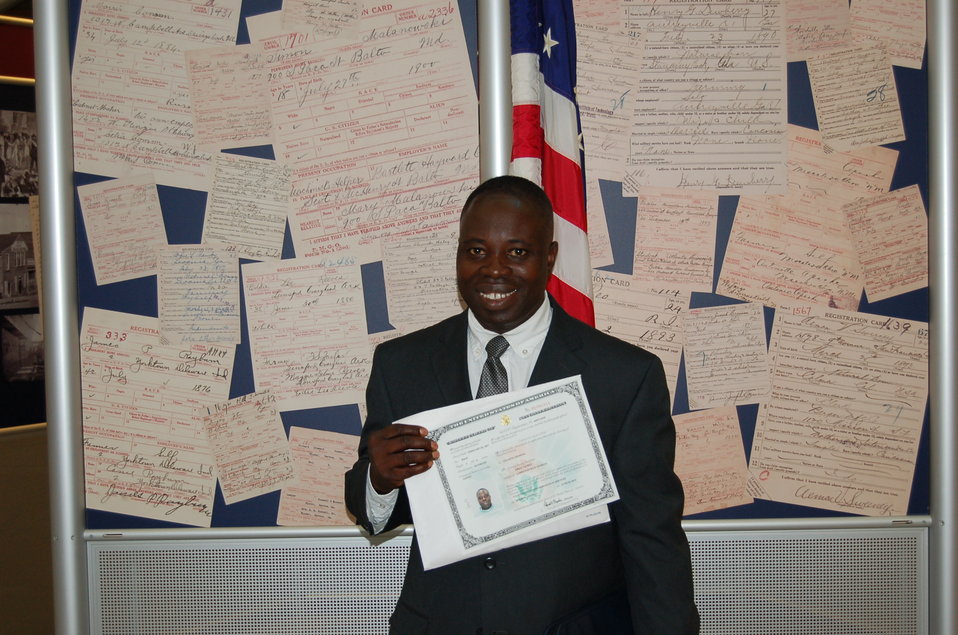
New Citizens